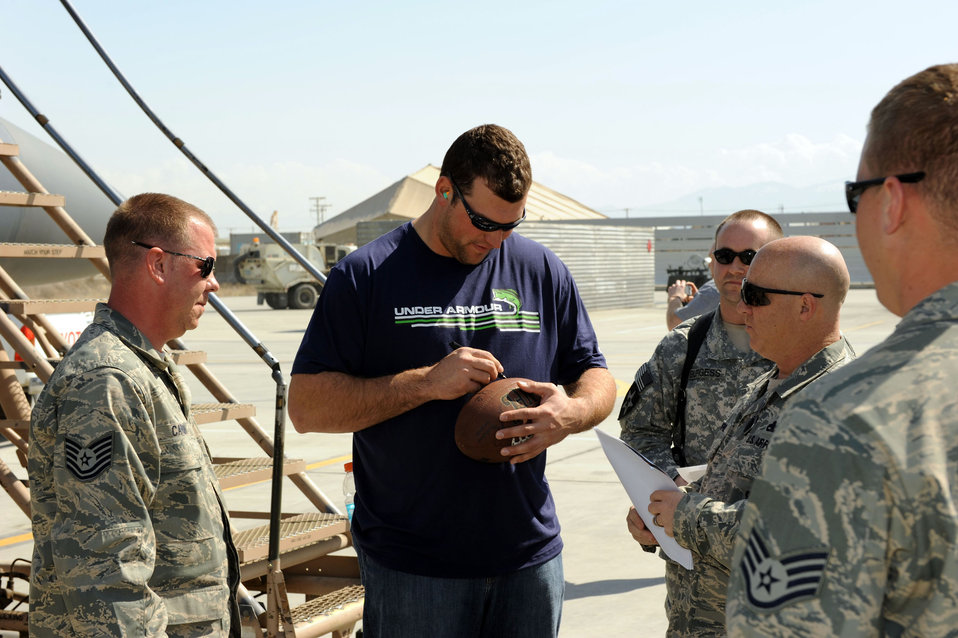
NFL players visit Bagram Airmen

Joe Thomas of the Cleveland Browns signs autographs for Airmen March 5, 2010, during a visit to Bagram Airfield, Afghanistan.